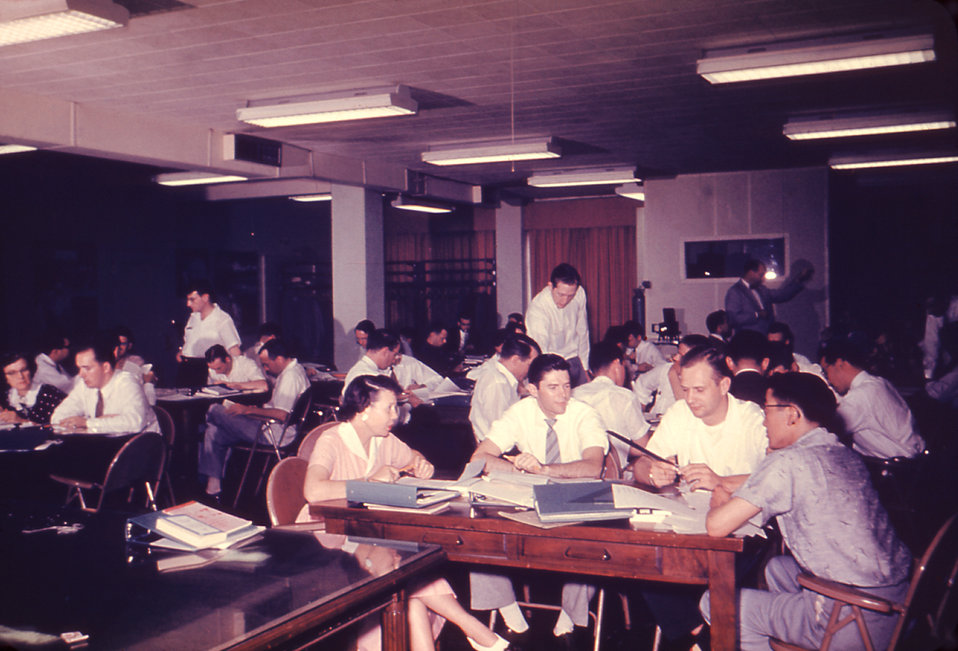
This is a photo of an Epidemic Intelligence Service (EIS) officer training course, which was held July, 1955.